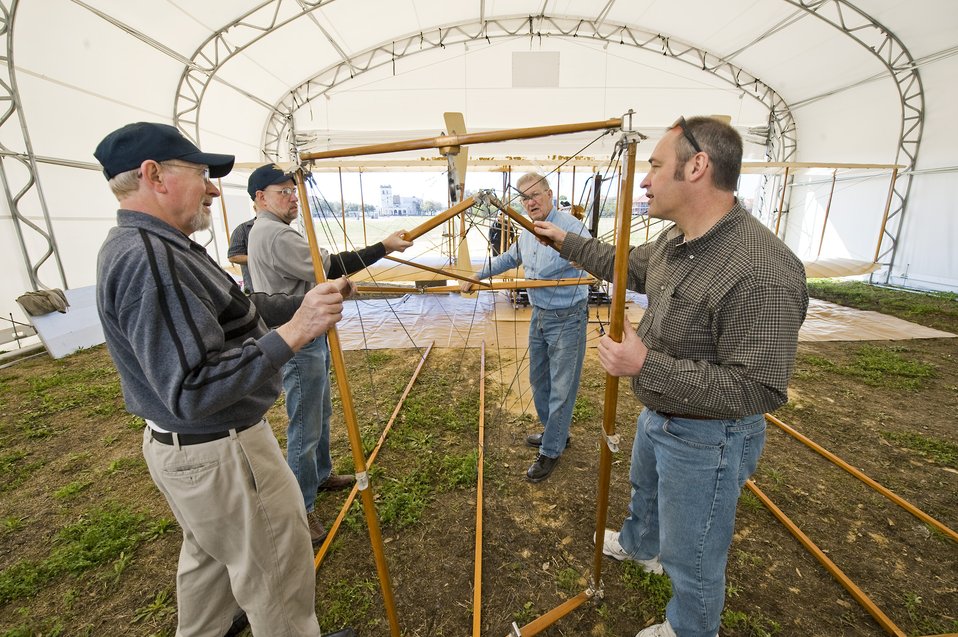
Wright

Don Gum (left-right), Tim Gaffney, and Frank Goepferich listen to Tom Walters, as he takes a crack at figuring out how to position the framework of the tail section of a Wright